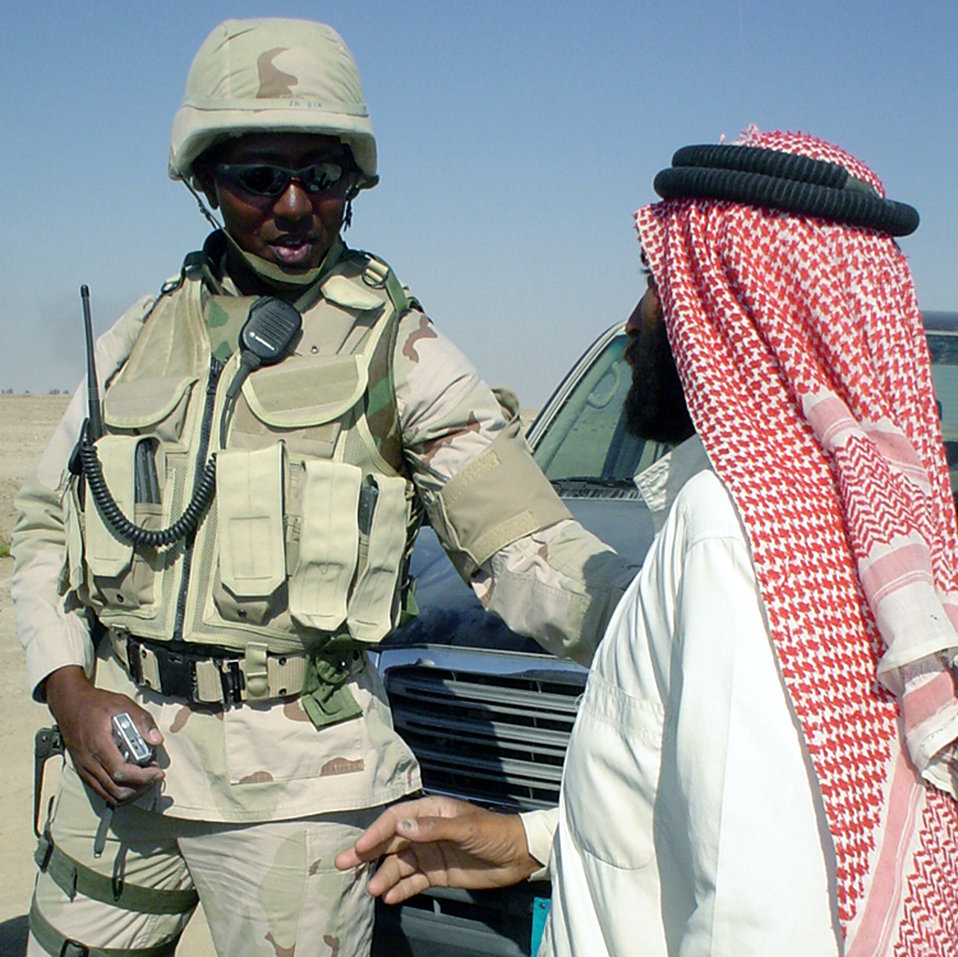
Airmen reach out to locals

TALLIL AIR BASE, Iraq -- Senior Master Sgt. Don Dixon talks with a local Bedouin family leader during an Operation Reach Out visit near here. Sergeant Dixon began the operation to establish a rapport with families living near the base. He is the 407th Expeditionary Security Forces Squadron's operations superintendent.